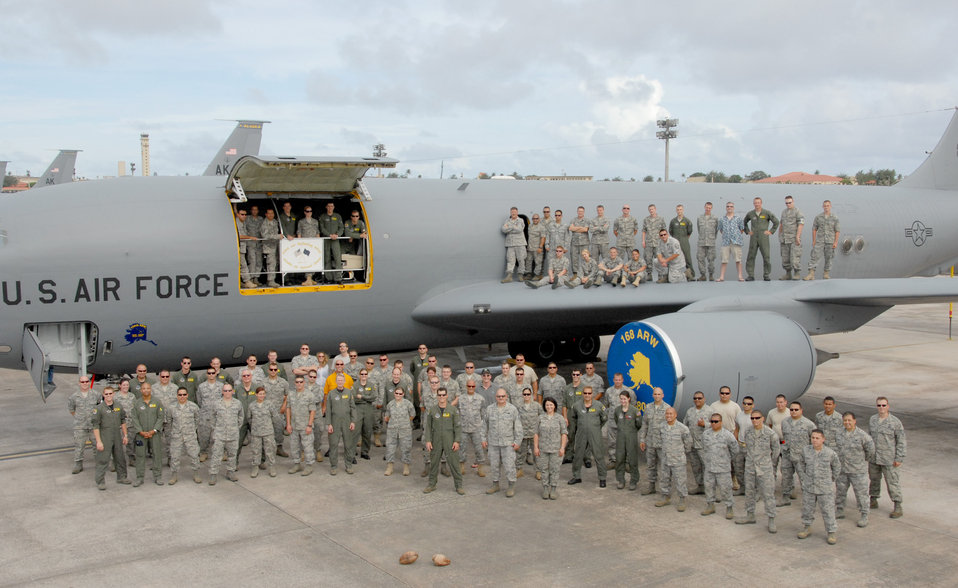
Andersen Airmen support continuous bomber presence

Members of the 506th Expeditionary Air Refueling Squadron pose with Guam Air National Guard members for a unit photo Oct. 1, 2010, on the flightline at Andersen Air Force Base, Guam. Both units are working in support of the continuous bomber presence and theatre security package and will remain here until Oct. 31.